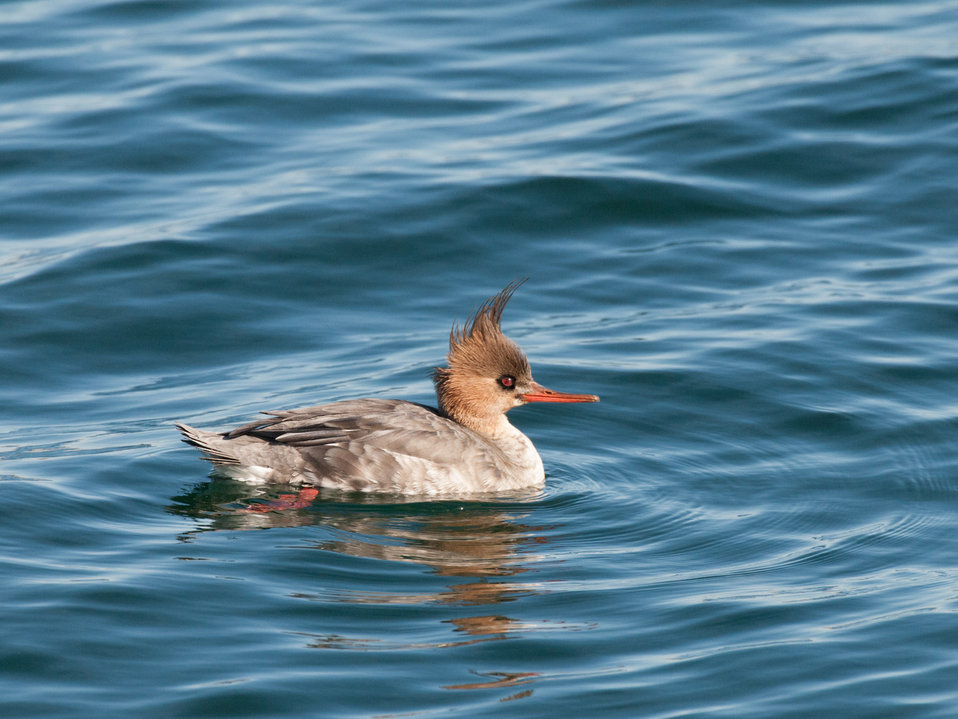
Red-breasted Merganser Female

Photographed in Provincetown, MA.